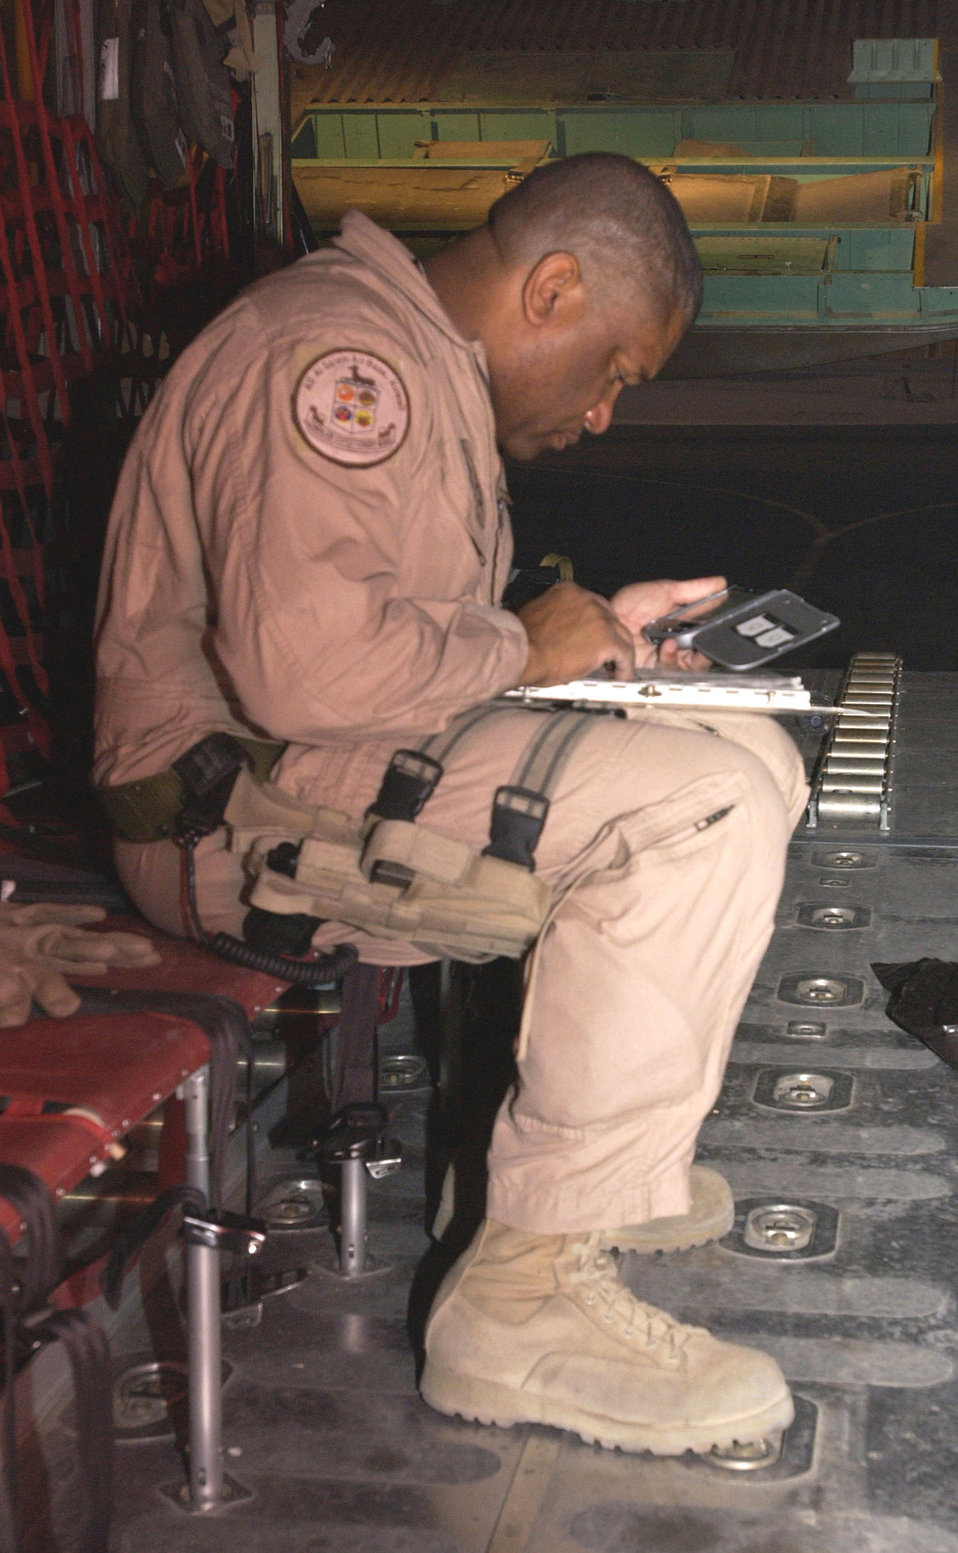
Bringing troops home safe

SOUTHWEST ASIA (AFPN) -- Tech. Sgt. Tony Pemberton completes pre-flight checks in the cargo bay of a 1962 C-130E prior to take off. Sergeant Pemberton is deployed here from Pope AFB, N.C., and is a loadmaster with the 737th Expeditionary Airlift Squadron.